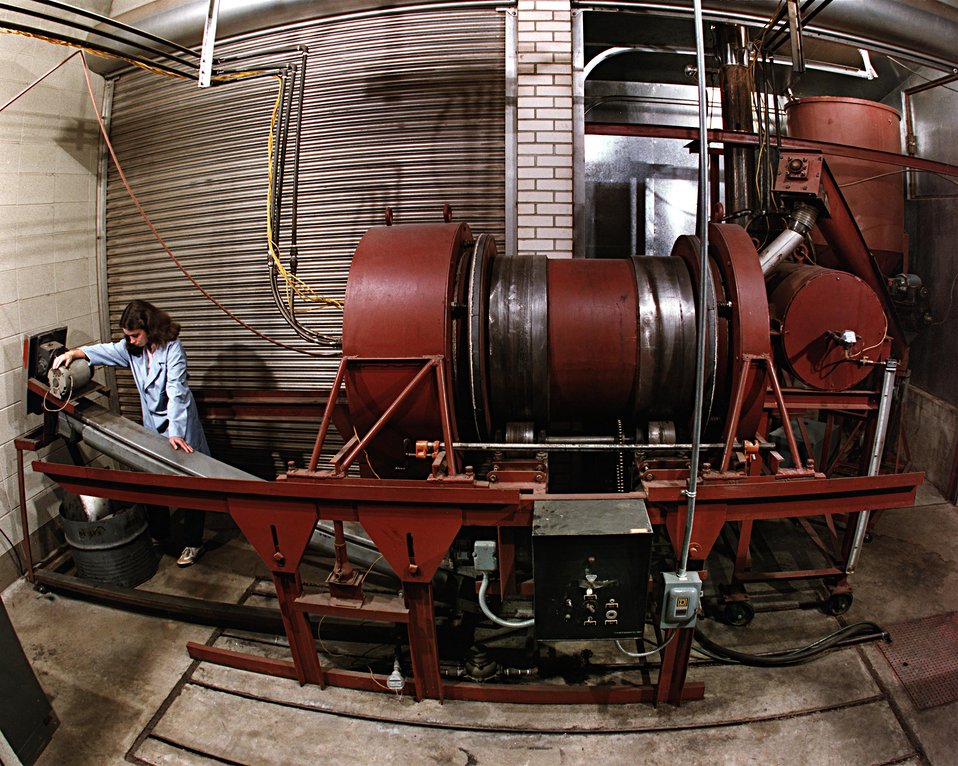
SCALE MODEL ROTARY KILN CONVERTS WOOD WASTES TO CHARCOAL AND OFF GASES.

THIS SCALE MODEL KILN DUPLICATES THE RETENTION TIME AND THE BED AGITATION OF THE FULL SCALE ROTARY CONVECTOR. OVERALL KILN DIMENSIONS, 35-INCHES LONG BY 26 INCHES OUTER DIAMETER,DUPLICATE THE LENGTH/ DIAMETER OF THE PROTOTYPE KILN. MATERIAL IS FED FROM THE FEED STORAGE BIN TO THE ROTARY KILN VIA TWO SCREW CONVEYORS. THE FIRST, A VARIABLE SPEED CONVEYOR, IS LOCATED IN THE BOTTOM OF THE BIN AND IS CONNECTED TO THE SECOND CONVEYOR, A CONSTANT SPEED CONVEYOR, WHICH DISCHARGES TO THE KILN. THE FEED IS CONVERTED TO CHARCOAL AND OFF GASES IN THE KILN, WITH THE CHAR DISCHARGING TO A WATER JACKETED SCREW CONVEYOR FOR REMOVAL TO STORAGE. AIR IS SUPPLIED TO THE KILN FROM A COMPRESSOR, PASSING THROUGH ROTAMETERS INTO THE KILN AT ANY OF SIX DIFFERENT LOCATIONS. OFF GASES PASS FROM THE KILN INTO AN AFTERBURNER WHERE SECONDARY AIR IS INTRODUCED. THE COMBUSTION GASES THEN ARE DISCHARGED TO THE ATMOSPHERE THROUGH A STACK.